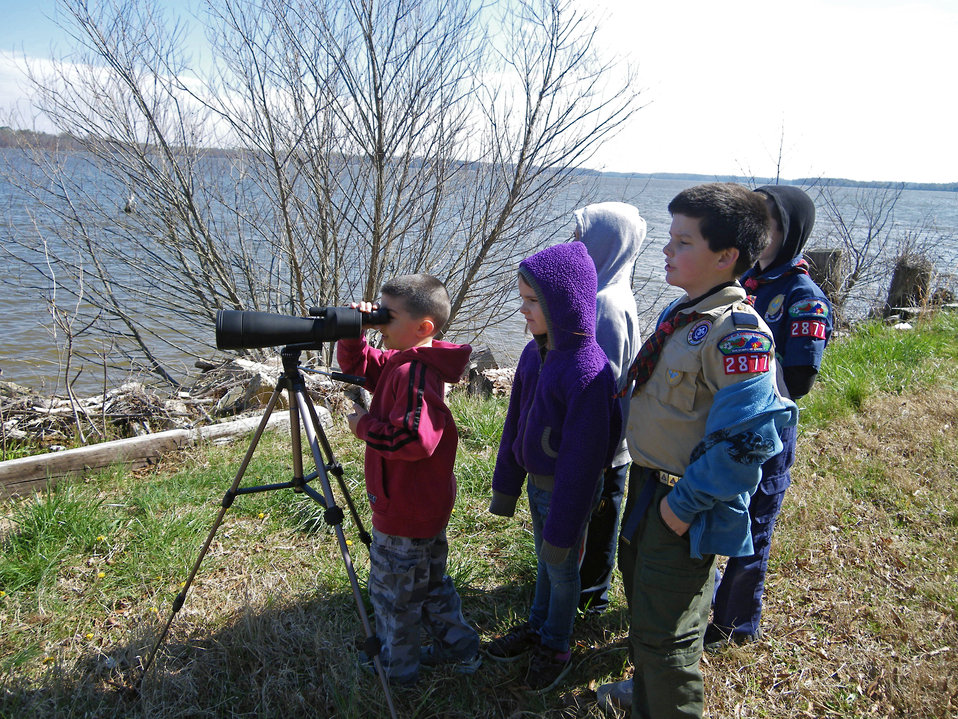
Environmental education

Presquile National Wildlife Refuge.